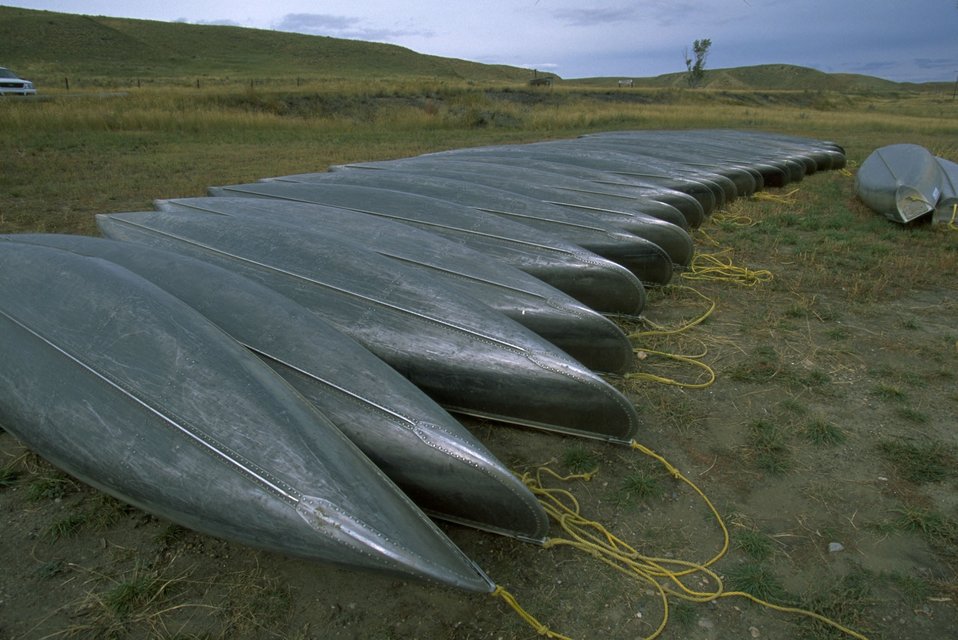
Canoes at Virgelle Merchantile near Loma